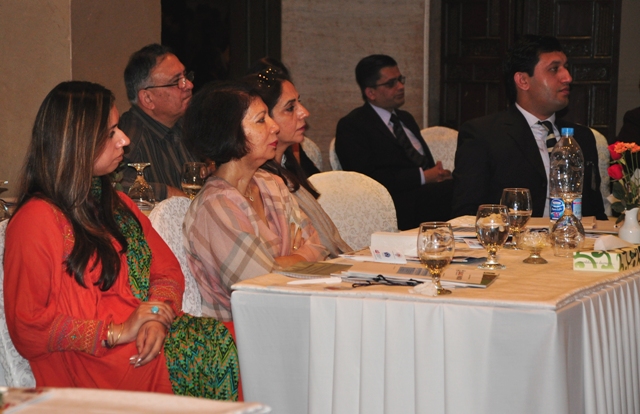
Workshop Participants